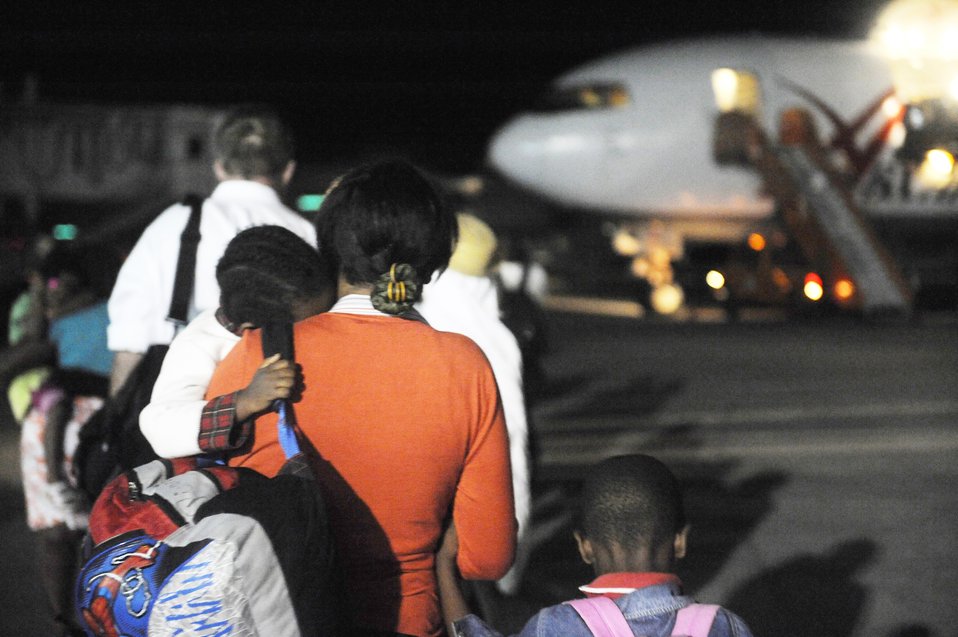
Returning

A U.S. citizen in Haiti waits to board an aircraft to be transported back to the United States Jan. 20, 2010, at Toussaint L'Ouverture International Airport in Port-au-Prince, Haiti.